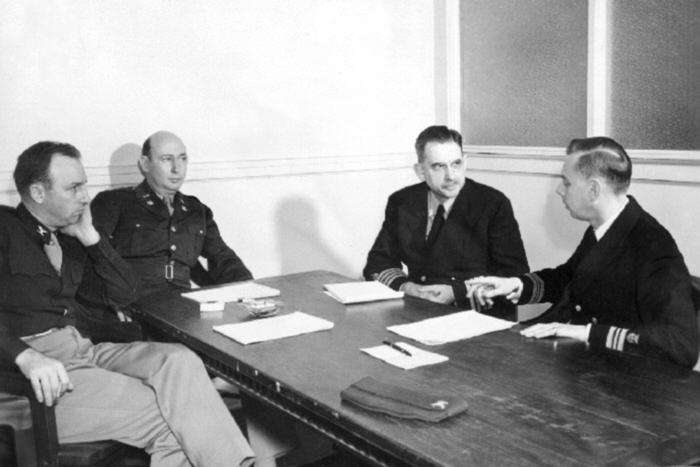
This historic 1945 image depicted a meeting between Dr. Joseph Mountin (second from right), Dr. Seward E. Miller (far right), Dr. Hollis (far left), and Dr. Boyd (second from left).